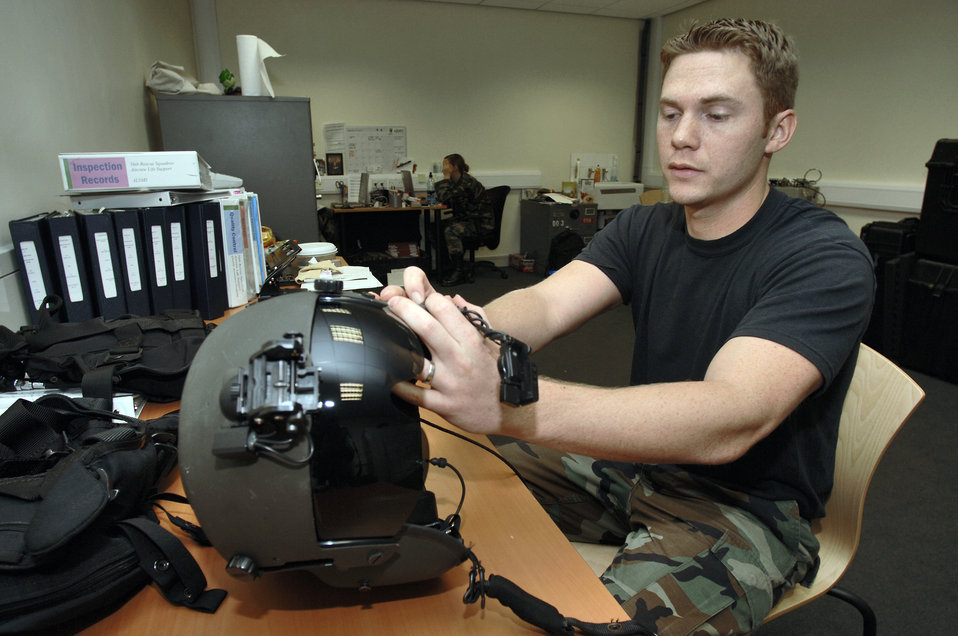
Rescue unit faces moving challenges

Staff Sgt. Brian Jasper inspects a flight helmet at Royal Air Force Lakenheath, England, on Aug. 2. The sergeant is a life support specialist with the 56th Rescue Squadron. The unit moved to this fighter base from Keflavik Air Base, Iceland, in May, and should be fully operational by mid-2007.